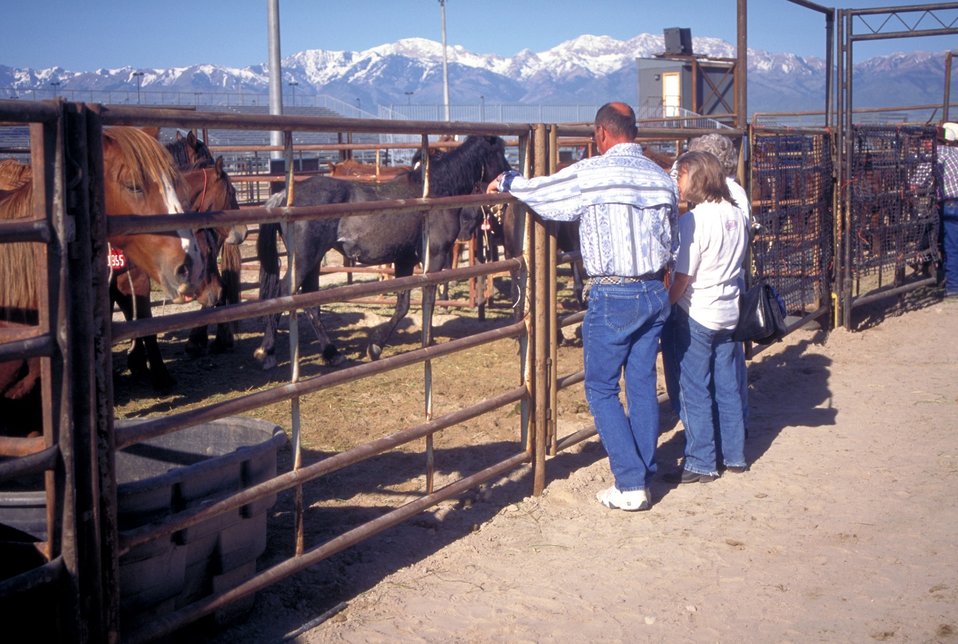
Utah Annual Wild Horse Festival.